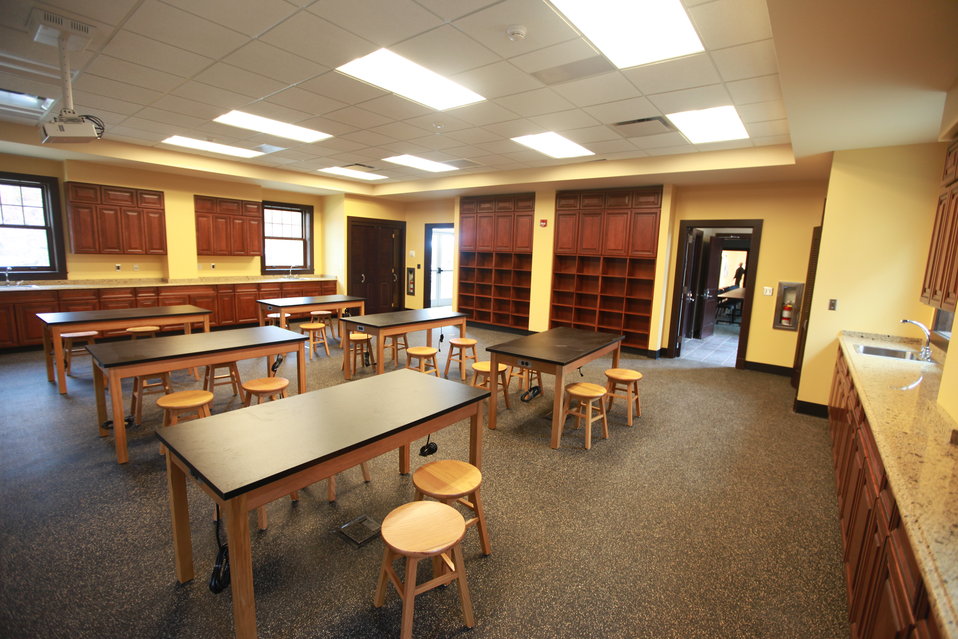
Lab room

The science lab room for visiting school kids.